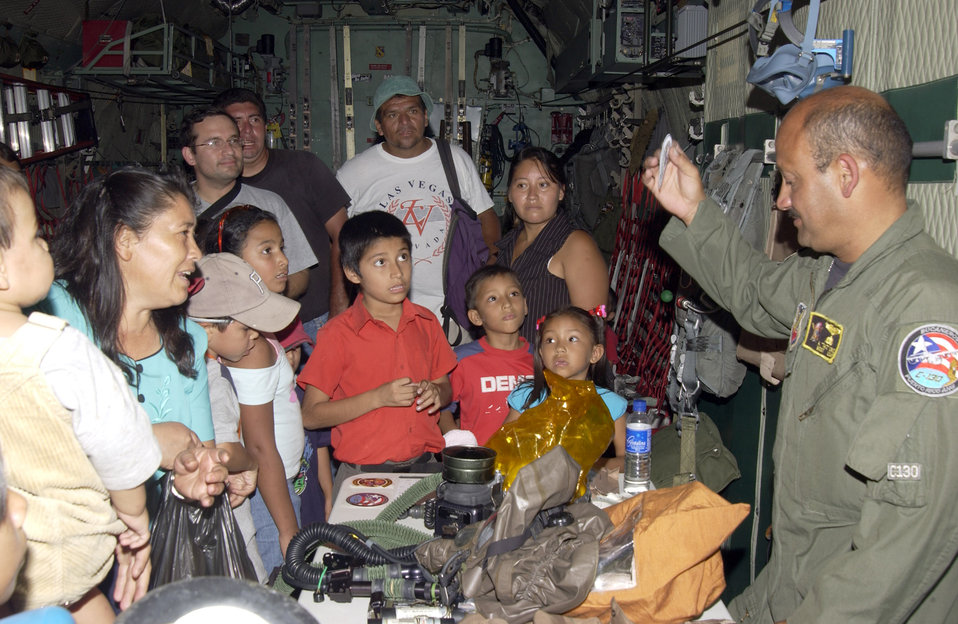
Airmen bring Airpower to San Salvador

ILOPANGO AIR BASE, El Salvador (AFPN) -- Master Sgt. Alberdecton Cruz, a Puerto Rican Air National Guard loadmaster, displays aircrew equipment to El Salvadorians during an air show in San Salvador. The PR ANG C-130 Hercules was the only U.S. aircraft on static display during the Ilopango Air Show 2005. Other U.S. Air Force participants included 150 Airmen, the F-15 West Coast Demonstration Team from Eglin Air Force Base, Fla.; the U.S. Air Force Thunderbirds from Nellis AFB, Nev.; a New Hampshire ANG KC-135 Stratotanker and two C-17 Globemaster IIIs from McChord AFB, Wa. and McGuire AFB, N.J.